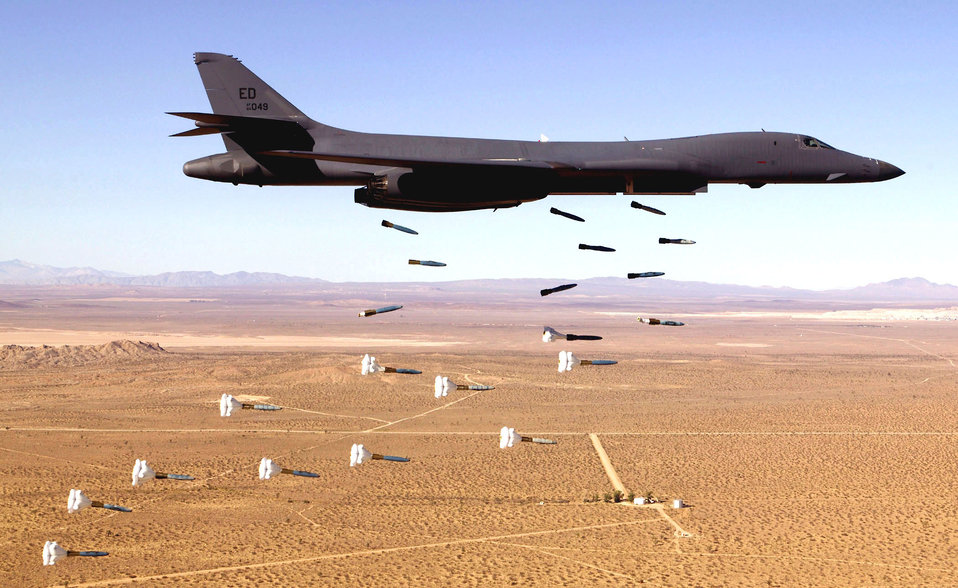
Lancer delivers payload

EDWARDS AIR FORCE BASE, Calif. -- A B-1B Lancer releases a payload of inert weapons here, after its record breaking flights. The B-1B unofficially set and broke almost 50 new world speed records during the air show Oct. 25 and 26.